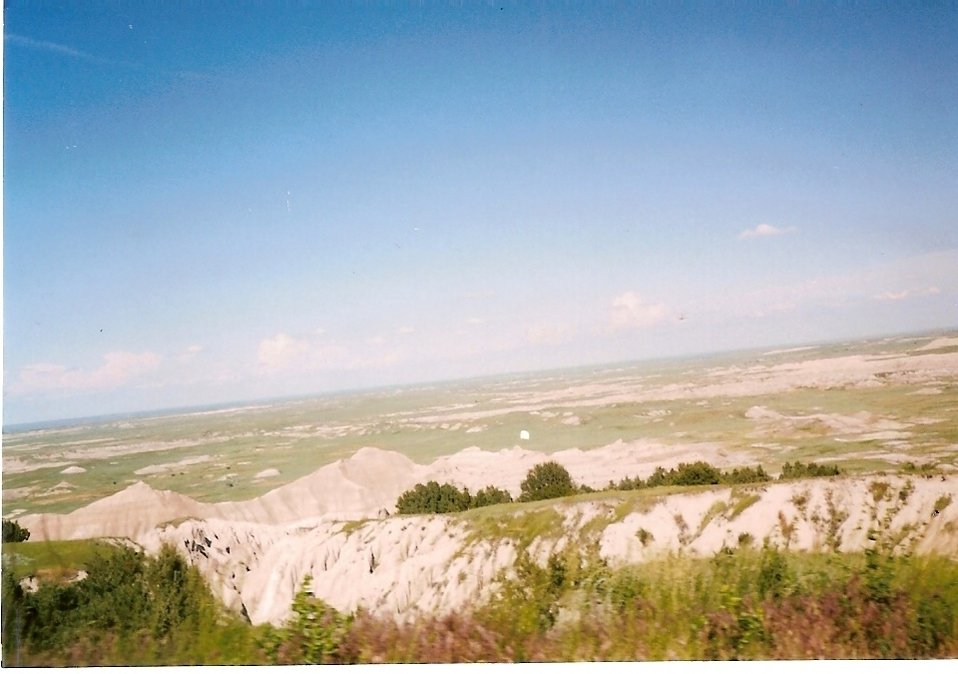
Badlands National Park. Taken the old fashioned way in June 2003.